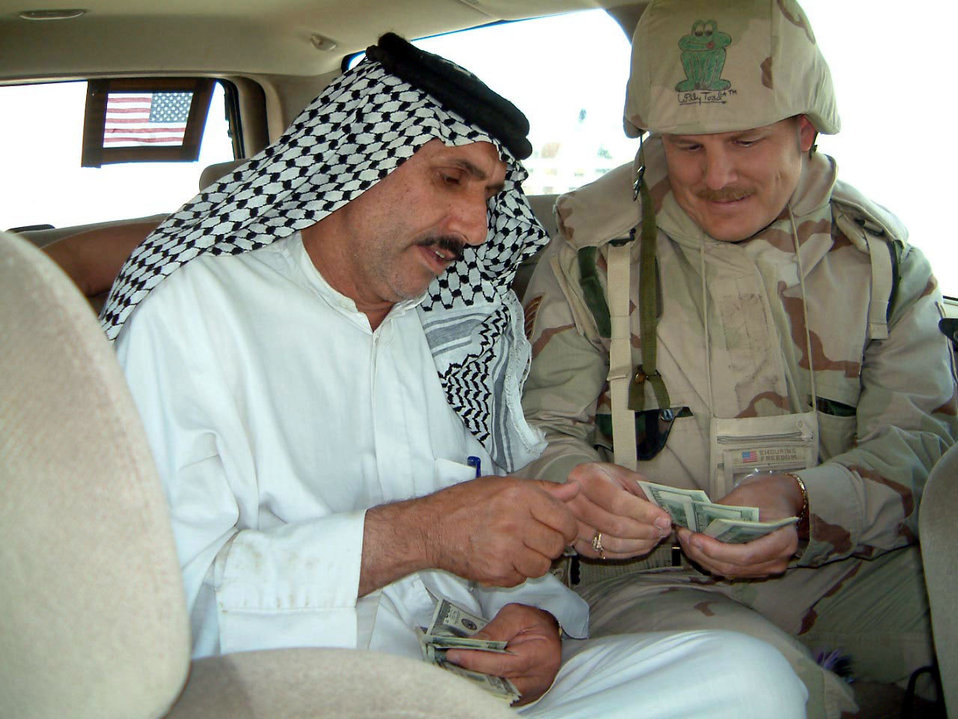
Show me the money

OPERATION IRAQI FREEDOM -- Tech. Sgt. Bill Pauley pays Iraqi vendor Housen Benian for the first loads of gravel for the